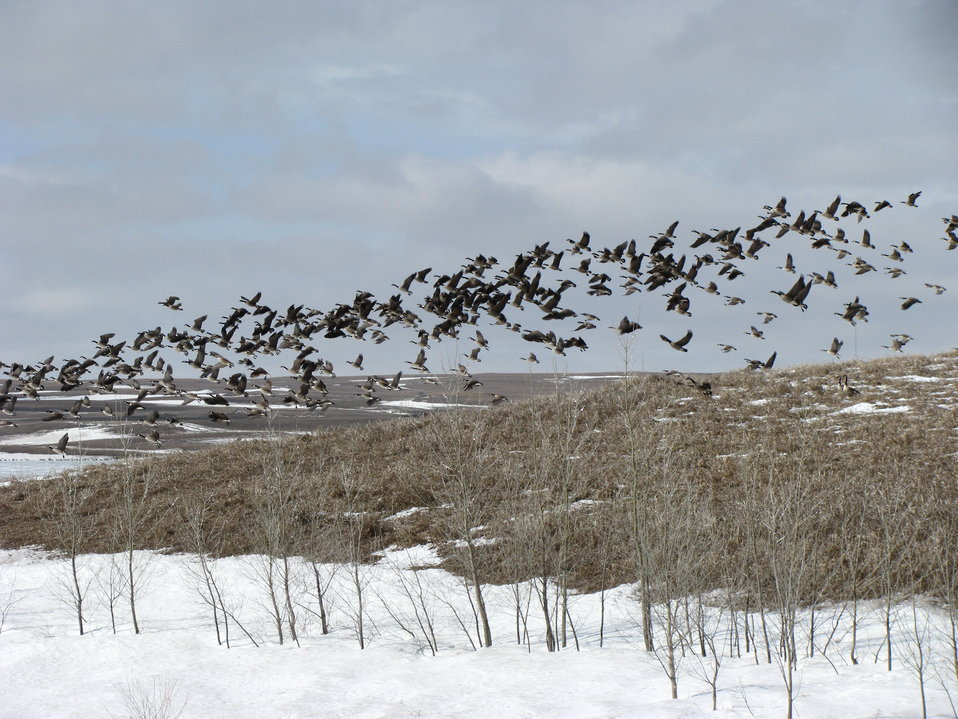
Canada Geese

A flock of Canada geese in March of 2009 on the Bender WPA.